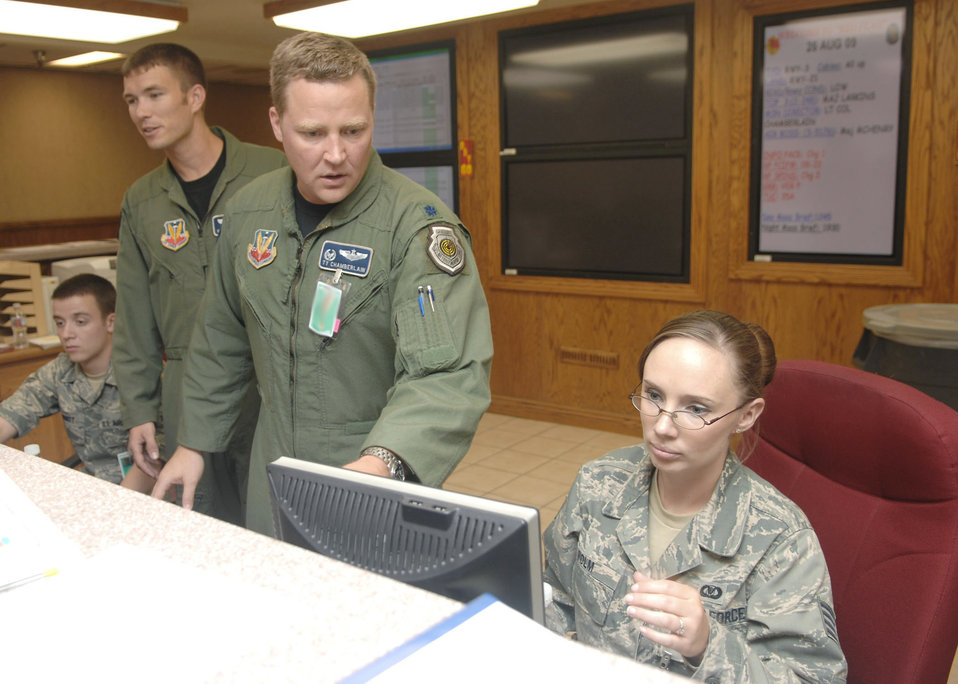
Veterans, first timers benefit from Red Flag exercises

Capt. Warren Carroll shadows Lt. Col. Tyrell Chamberlain as he goes over the most current information at the Red Flag operations desk with Staff Sgt. Mariah Polm Aug. 26, 2009 at Nellis Air Force Base, Nev. Colonel Chamberlain is the 20th Bomb Squadron commander at Barksdale AFB, La. Captain Carroll is also assigned to the 20th Bomb Squadron. Sergeant Polm is an airfield resource manager with 34th Fighter Squadron, Hill AFB, Utah.